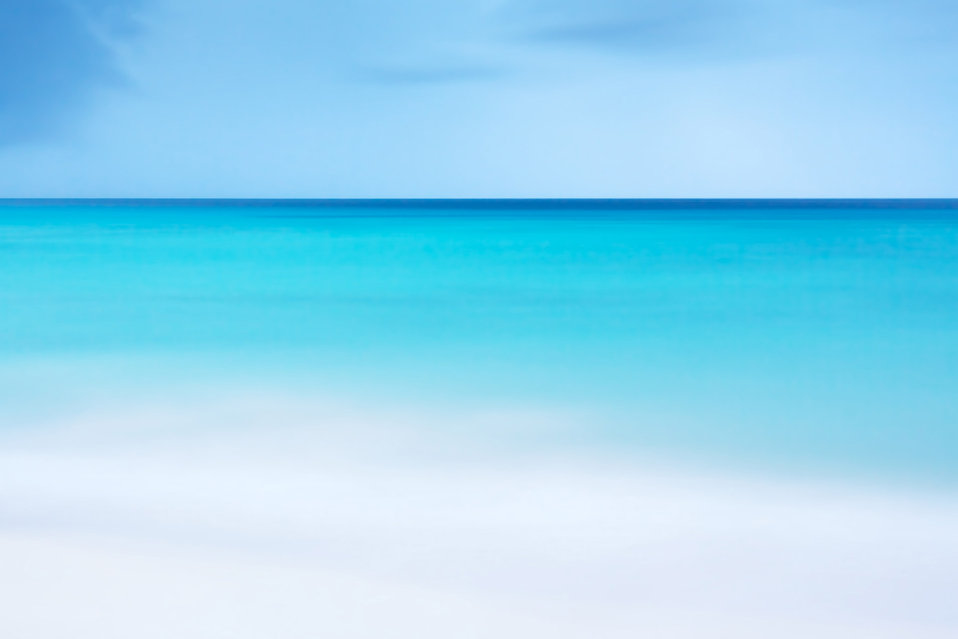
Sea wallpaper

White sand and blue sea and sky wallpaper.